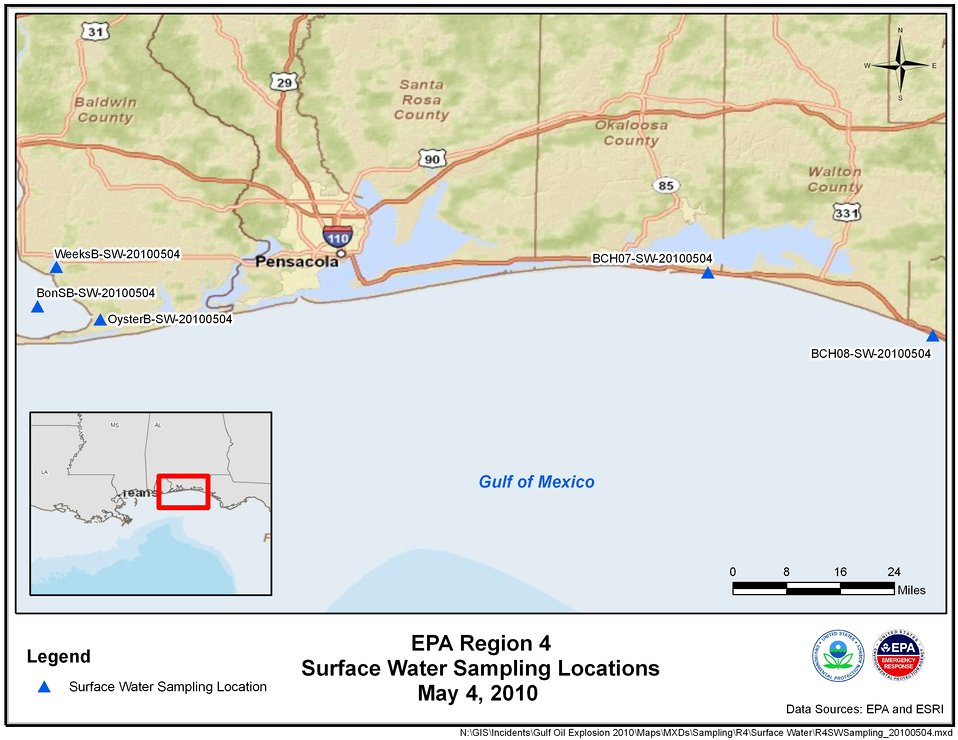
EPA Water Sampling Locations May 4, 2010